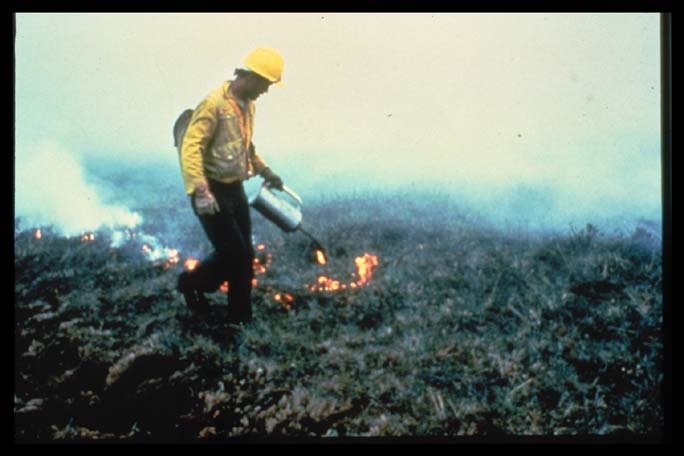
Prescribed fire